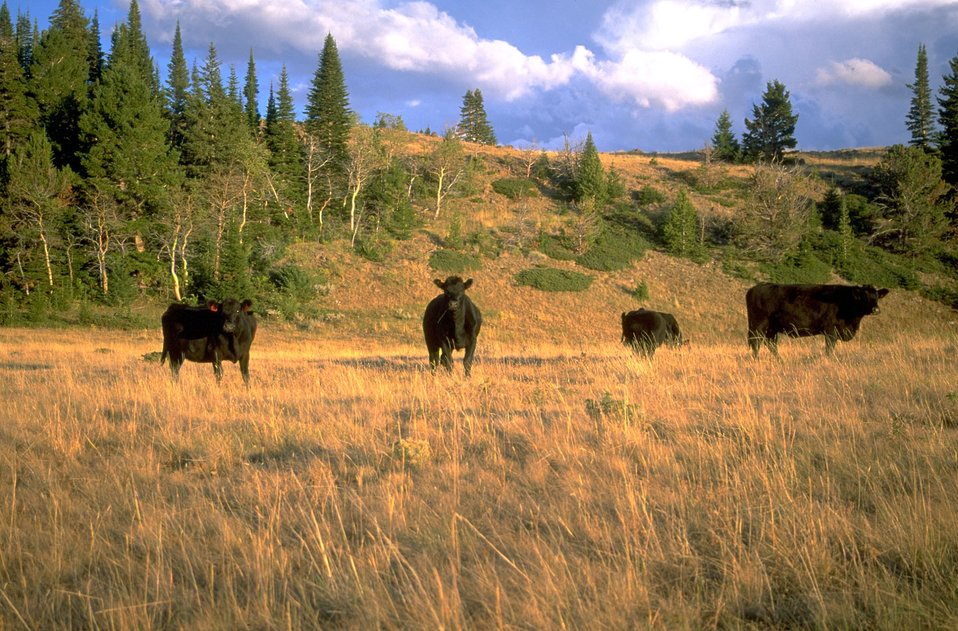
Four cows in a field of grass